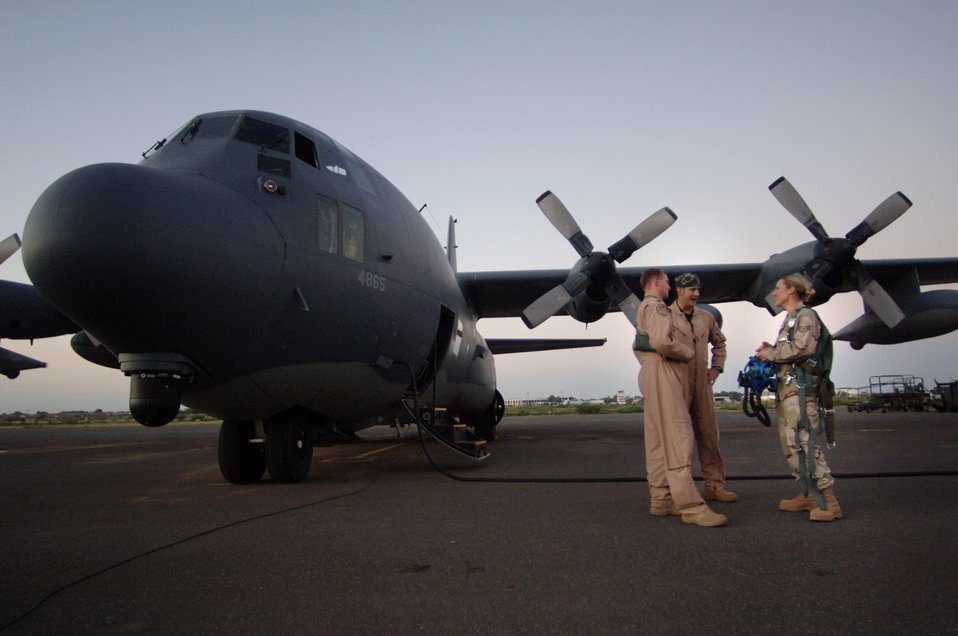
Serving through the season: Staff Sgt. Elizabeth Eggel

Staff Sgt. Elizabeth Eggel chats with HC-130 navigator Capt. Jesse Enfield and co-pilot 1st Lt. Tim Saxton before a refueling mission Dec 17. As the only life support technician deployed to the Horn of Africa, the six-year veteran from Davis-Monthan Air Force Base, Ariz., provides support to more than 40 Air Force, Navy and Marine aircrew members based at Camp Lemonier, Djibouti.